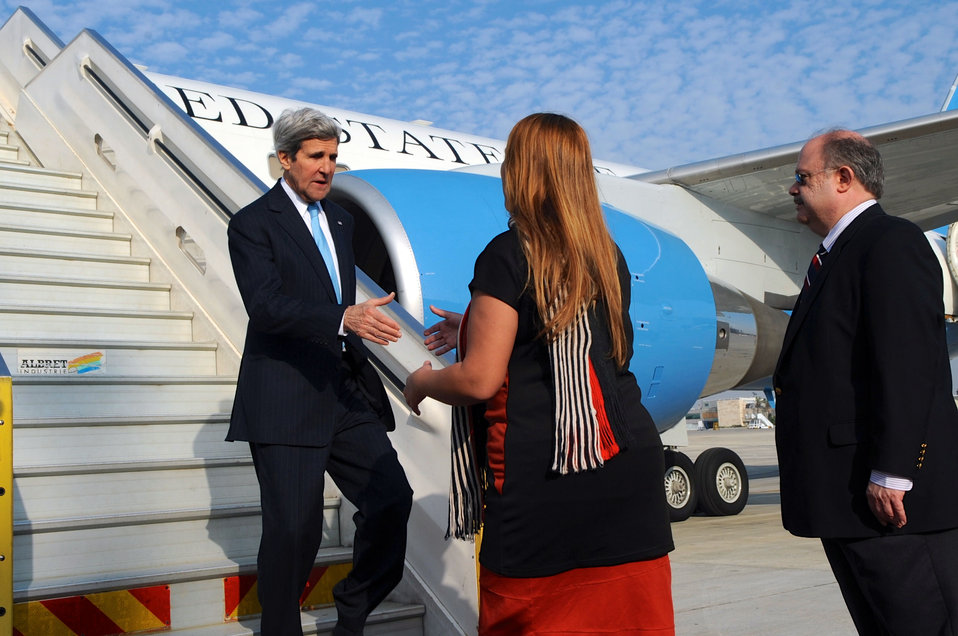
Secretary Kerry is Greeted by Israeli Officials in Tel Aviv

Orit Moshe and Martin Peled-Flax of the Israeli Ministry of Foreign Affairs greet U.S. Secretary of State John Kerry as he arrives in Tel Aviv, Israel, on January 2, 2014, for Middle East peace talks.